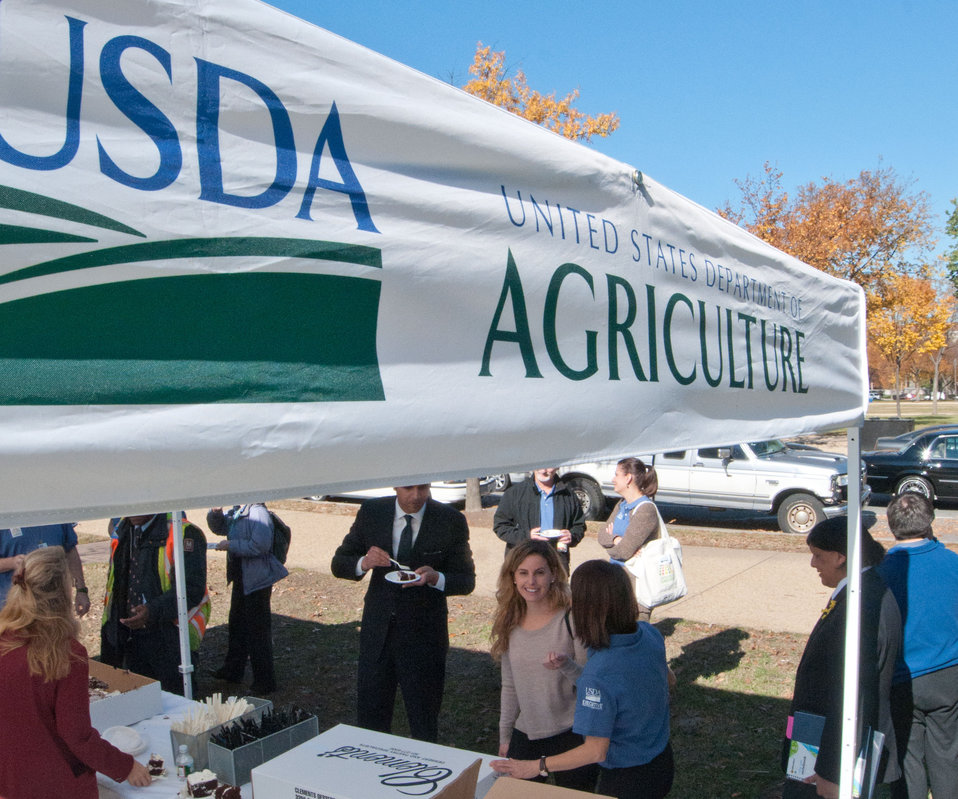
Graduation day of the 2011 U.S. Department of Agriculture (USDA) Executive Master Gardeners, on Tuesday, November 8, 2011 in Washington, DC. During the past six-weeks, students contributed 40-hours of volunteer time, completed studies and testing to receive their certificates today as an Executive Master Gardener. Many of the sessions occurred before work hours, during lunchtime or at community garden project sites such as Powell Middle School. USDA challenges its employees to establish People's Gardens at USDA facilities worldwide or in community gardens. People's Gardens vary in size and type, but all have a common purpose - to help the community and the environment. To learn about the People’s Garden Initiative visit www.usda.gov/wps/portal/usda/usdahome?contentid=peoples g....